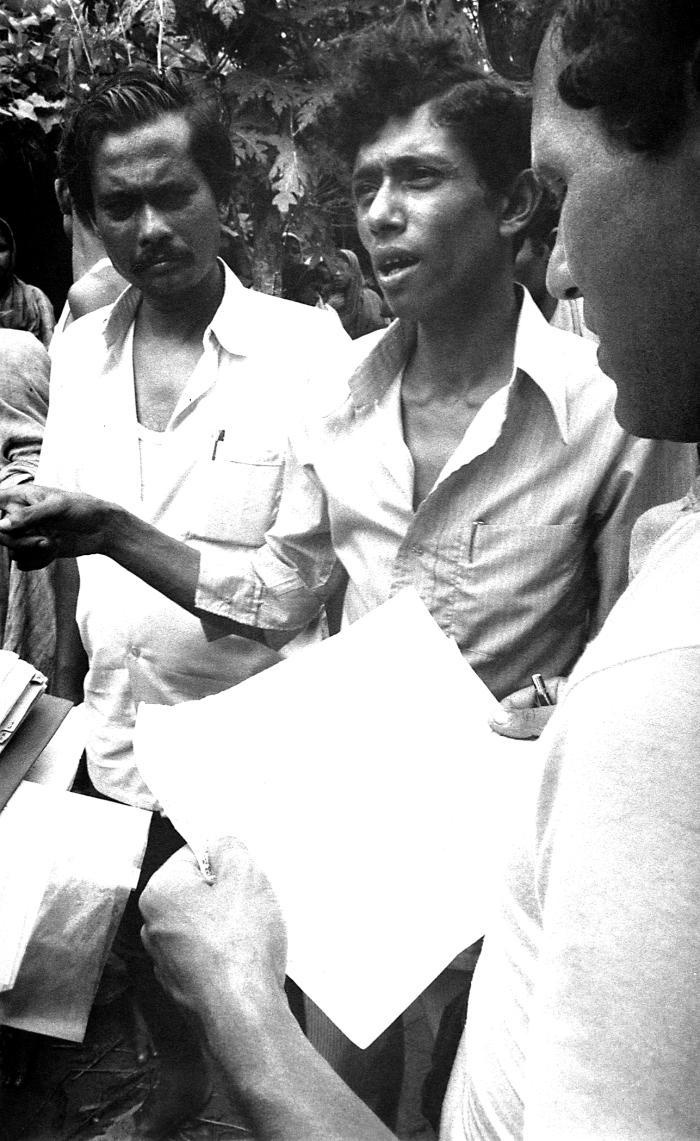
This 1975 photograph depicted a Bangladesh man named Shahabuddin (far left), a Bangladesh resident, who was one of the best Smallpox Surveillance Team leaders involved in the smallpox eradication efforts, and Dr. Daniel Tarantola (far right) holding some data collection forms, as they were on their house to house community searches for possible smallpox cases. In his capacity as a Team Leader, World Health Organization (WHO) epidemiologist Dr. Tarantola provided astute epidemiological advice during this daunting undertaking.